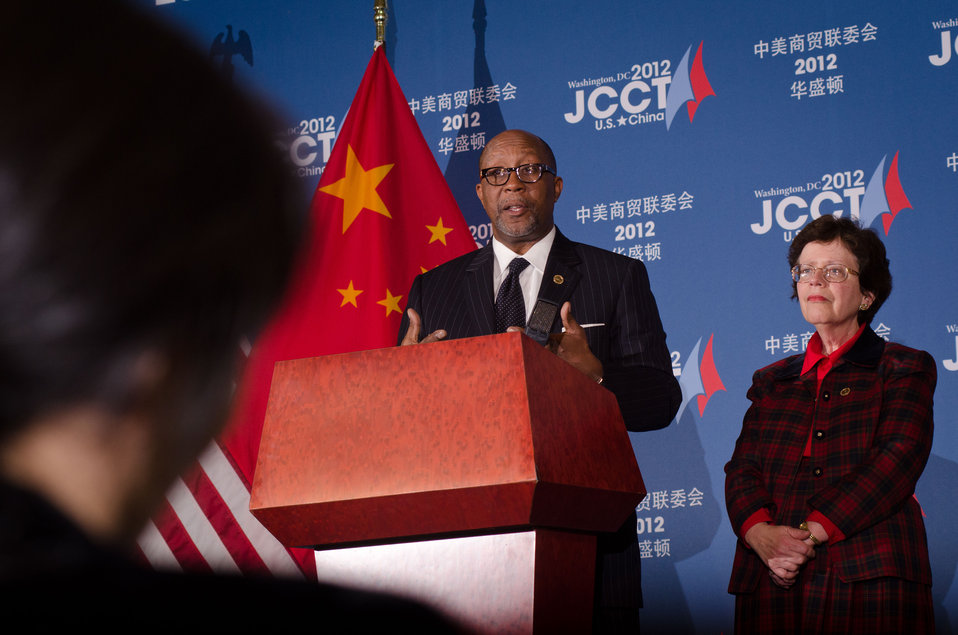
U.S. Trade Representative Ron Kirk and Acting U. S. Commerce Secretary Rebecca Blank responds to questions from international news media journalists at the 23rd Session of the U.S. China Joint Commission on Commerce and Trade (JCCT) at the Andrew W. Mellon Auditorium in Washington, D.C. on Wednesday, Dec. 19, 2012. The JCCT holds high-level plenary meetings on an annual basis to review progress made by working groups that focus on a wide variety of trade issues. These working groups meet throughout the year to address topics such as intellectual property rights, agriculture, pharmaceuticals and medical devices, information technology, tourism, commercial law, environment, and statistics.